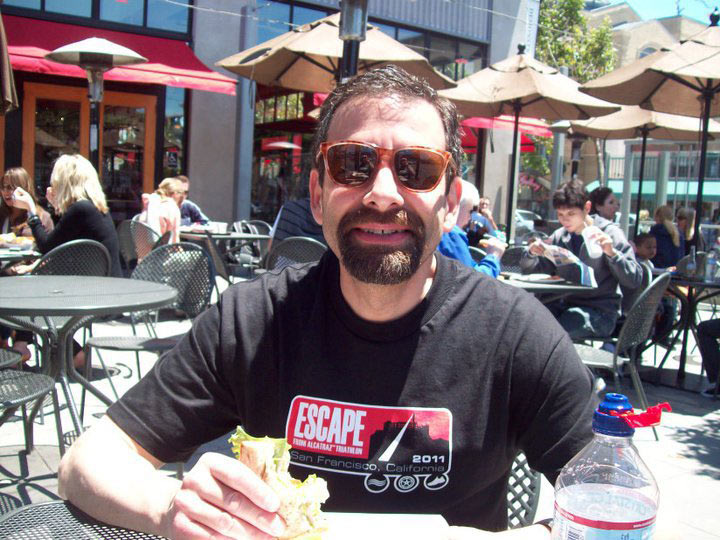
Gary Goldberg-Alaska Region

Gary Goldberg, Administrative Officer for Fisheries and Ecological Services, served in the Army.